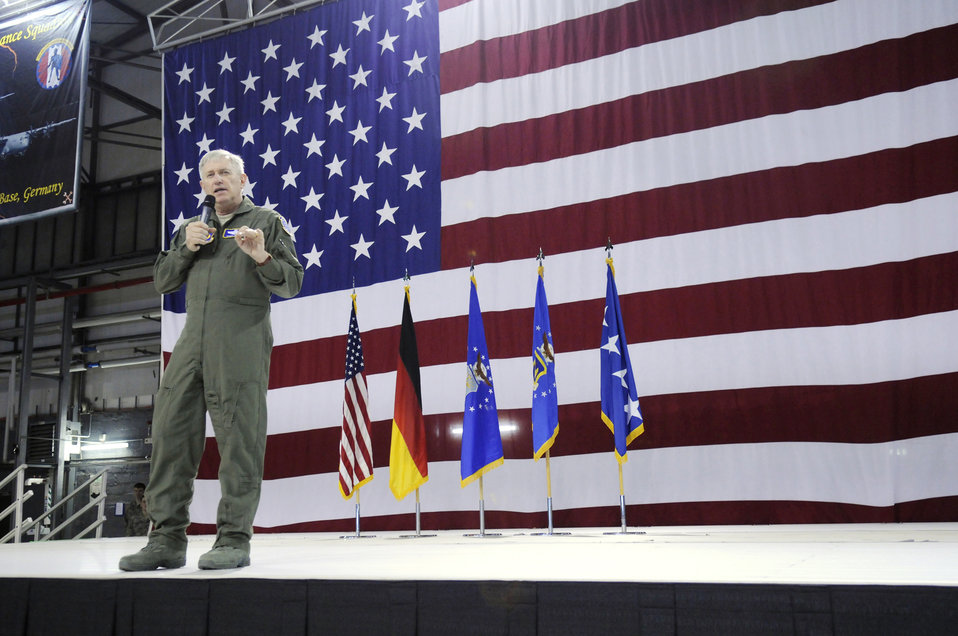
Gen. Brady visits the 86th Airlift Wing

Gen. Roger A. Brady, U.S. Air Forces in Europe commander, speaks to members of the 86th Airlift Wing at Ramstein Air Base, Germany, during a wing-wide call March 2. During the meeting, General Brady focused on key messages regarding the future of the force.